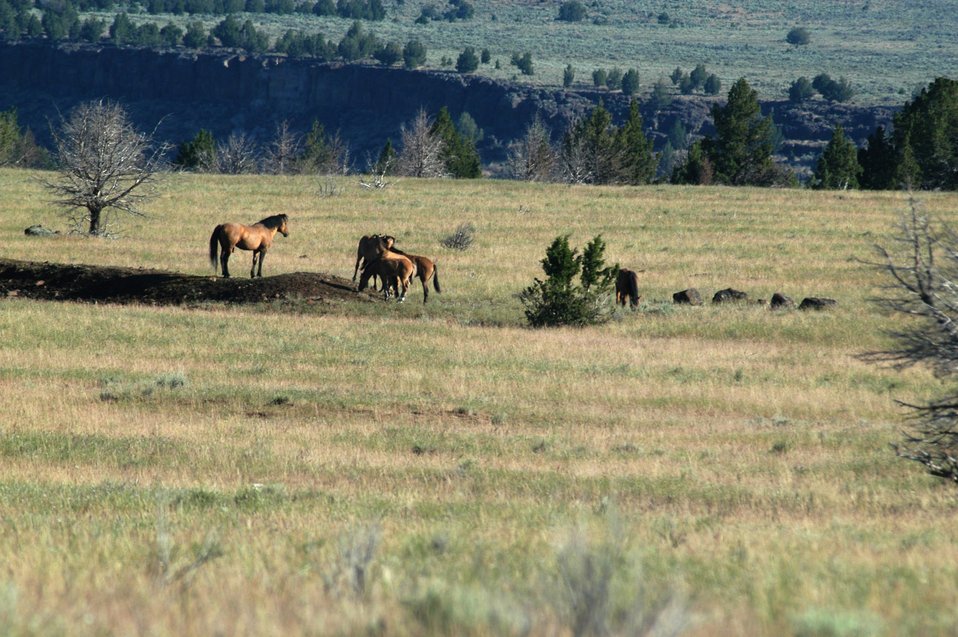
Kiger horses roam the plateaus of the Kiger Wildhorse Herd Management Area near Steens Mountain in Southeastern Oregon.